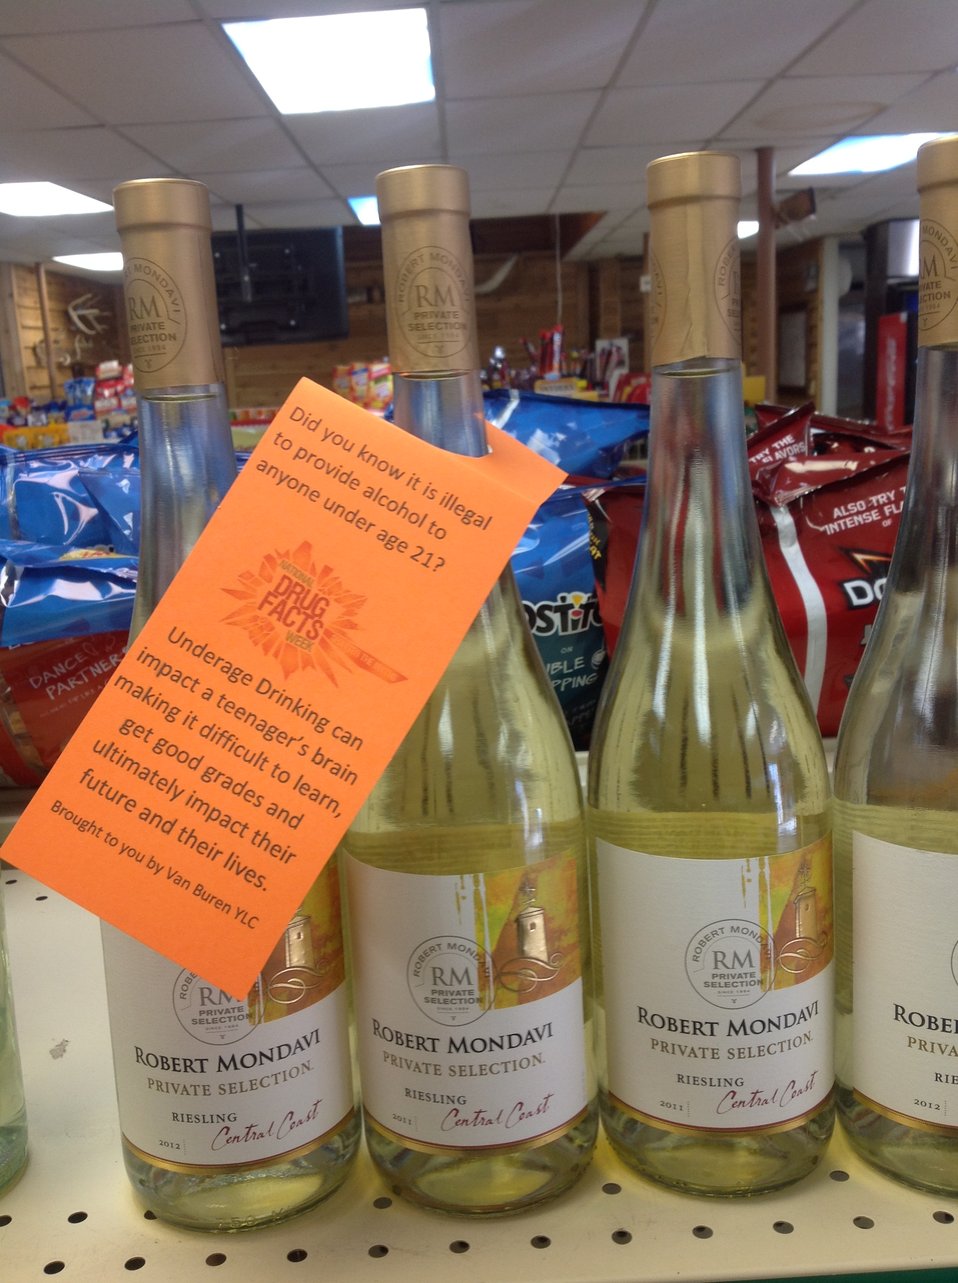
Getting the Word Out

Teenagers from the Van Buren County SAFE Coalition's, Youth Leadership Council (YLC) in Keosauqua, Iowa participate in various events during National Drug Facts Week, 2014.